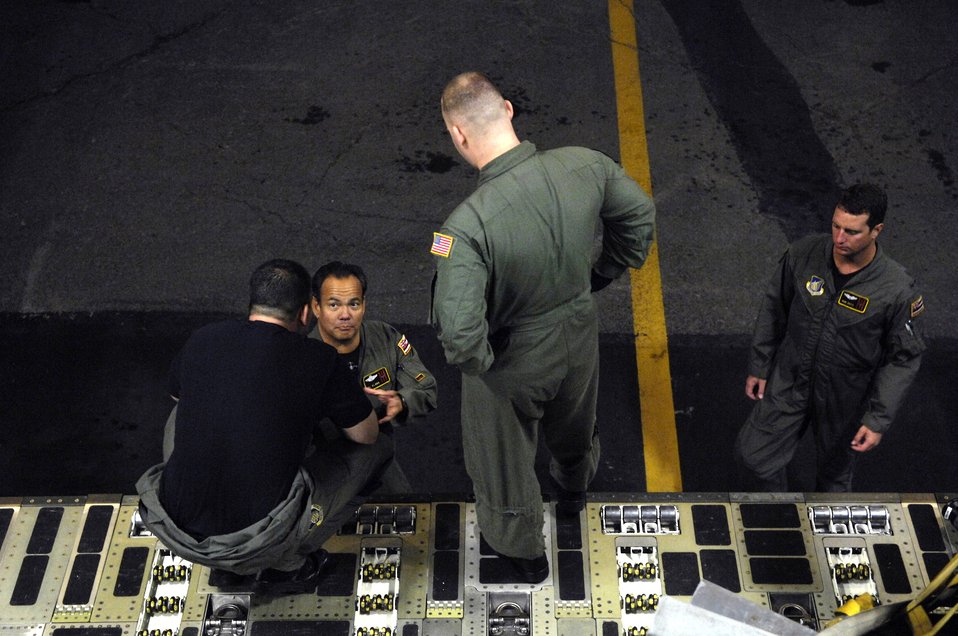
C-17 delivers strategic capability

Staff Sgt. Jason Scaffidi talks with other C-17 Globemaster III crew members before departing for a mission Jan. 25 from Hickam Air Force Base, Hawaii. Sergeant Scaffidi is a loadmaster with the 535th Airlift Squadron. The C-17 Globemaster III is capable of rapid strategic delivery of troops and all types of cargo to main operating bases or directly to forward bases in the deployment area.